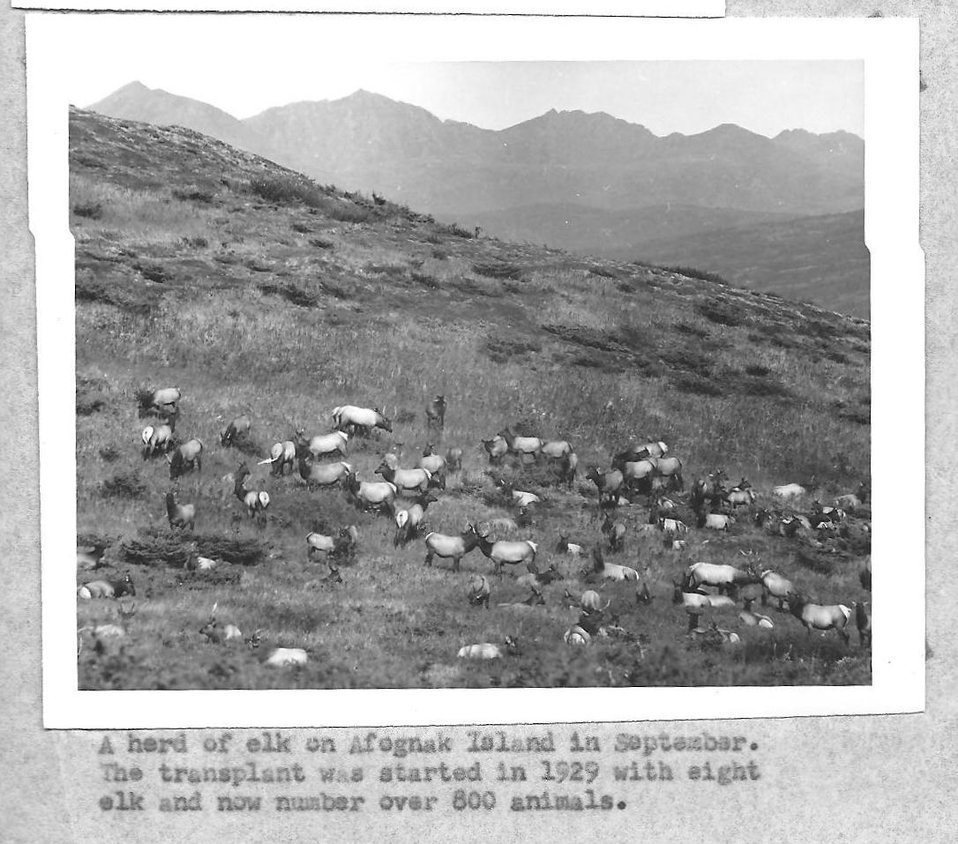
(1958) Herd of Elk

Credit: USFWS

Source and Contact: Kodiak National Wildlife Refuge